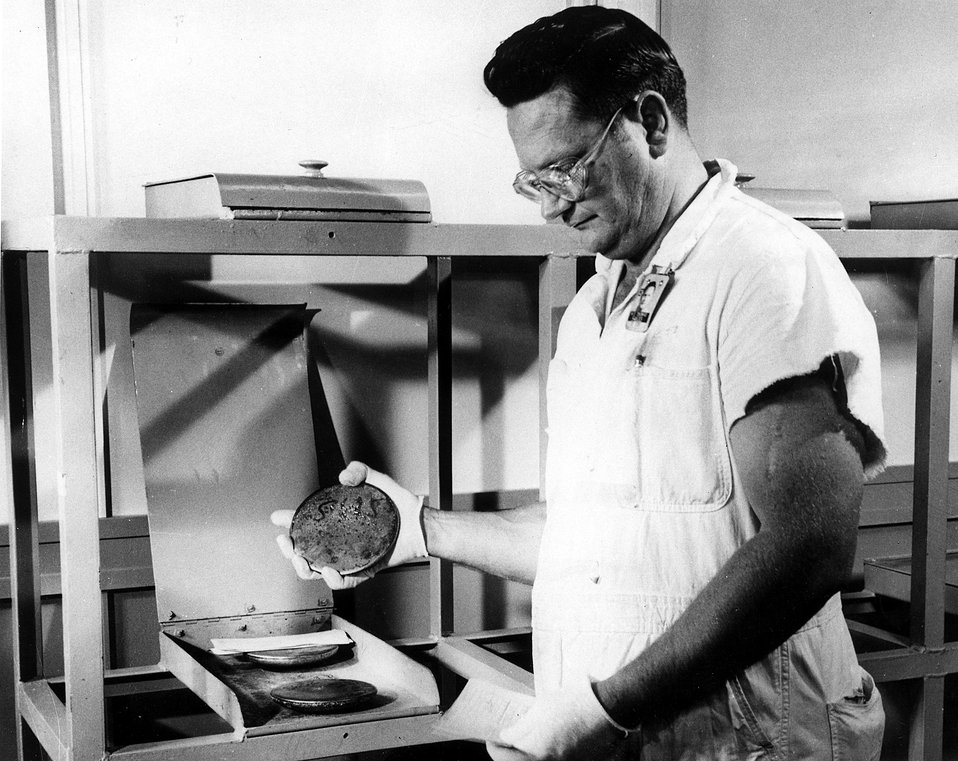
A worker at the Atomic Energy Commission's Y-12 Plant at Oak Ridge, Tennessee examines a 'biscuit' of uranium metal which contains about 93 percent U-235. Circa 1965.